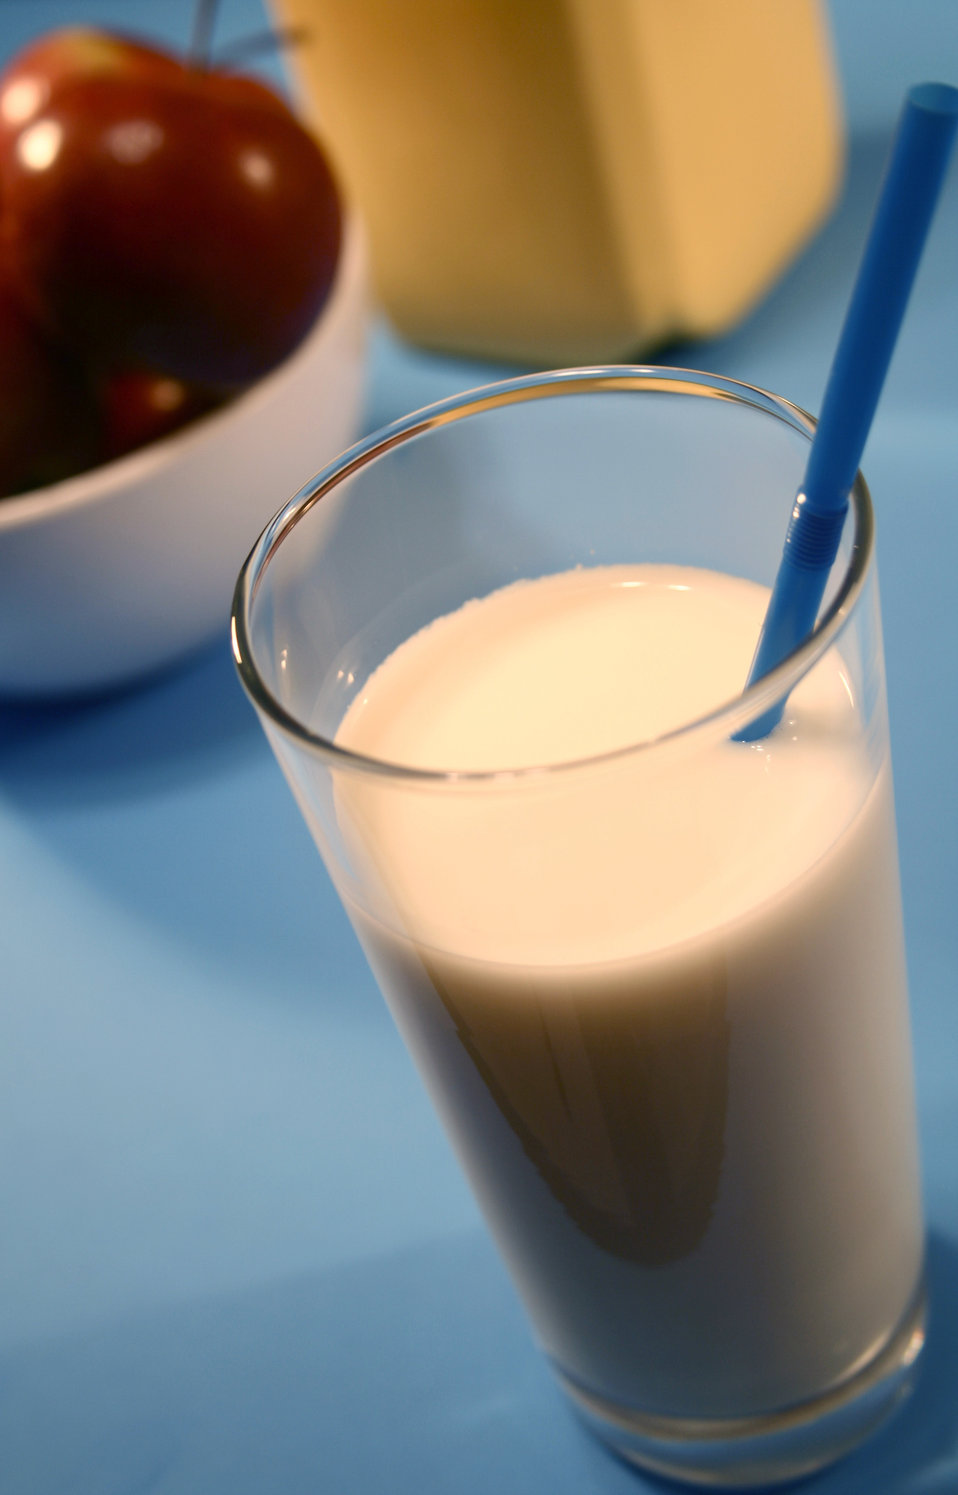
In the foreground of this photograph, a glass of milk with its blue straw, sits atop a blue table top. In the background sits a white ceramic bowl containing a number of Rome Beauty apples, next to which sits a half-gallon plastic milk container.